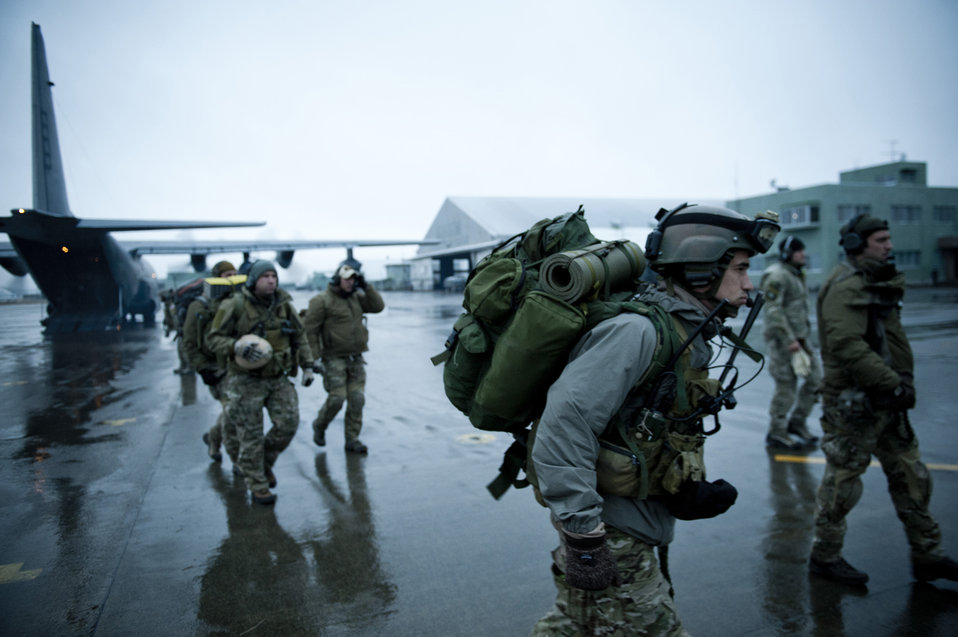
Boots on the ground

Airmen from the 320th Special Tactics Squadron at Kadena Air Base, Japan,exit an MC-130P Combat Shadow March 16, 2011, at Matsushima AB, Japan.